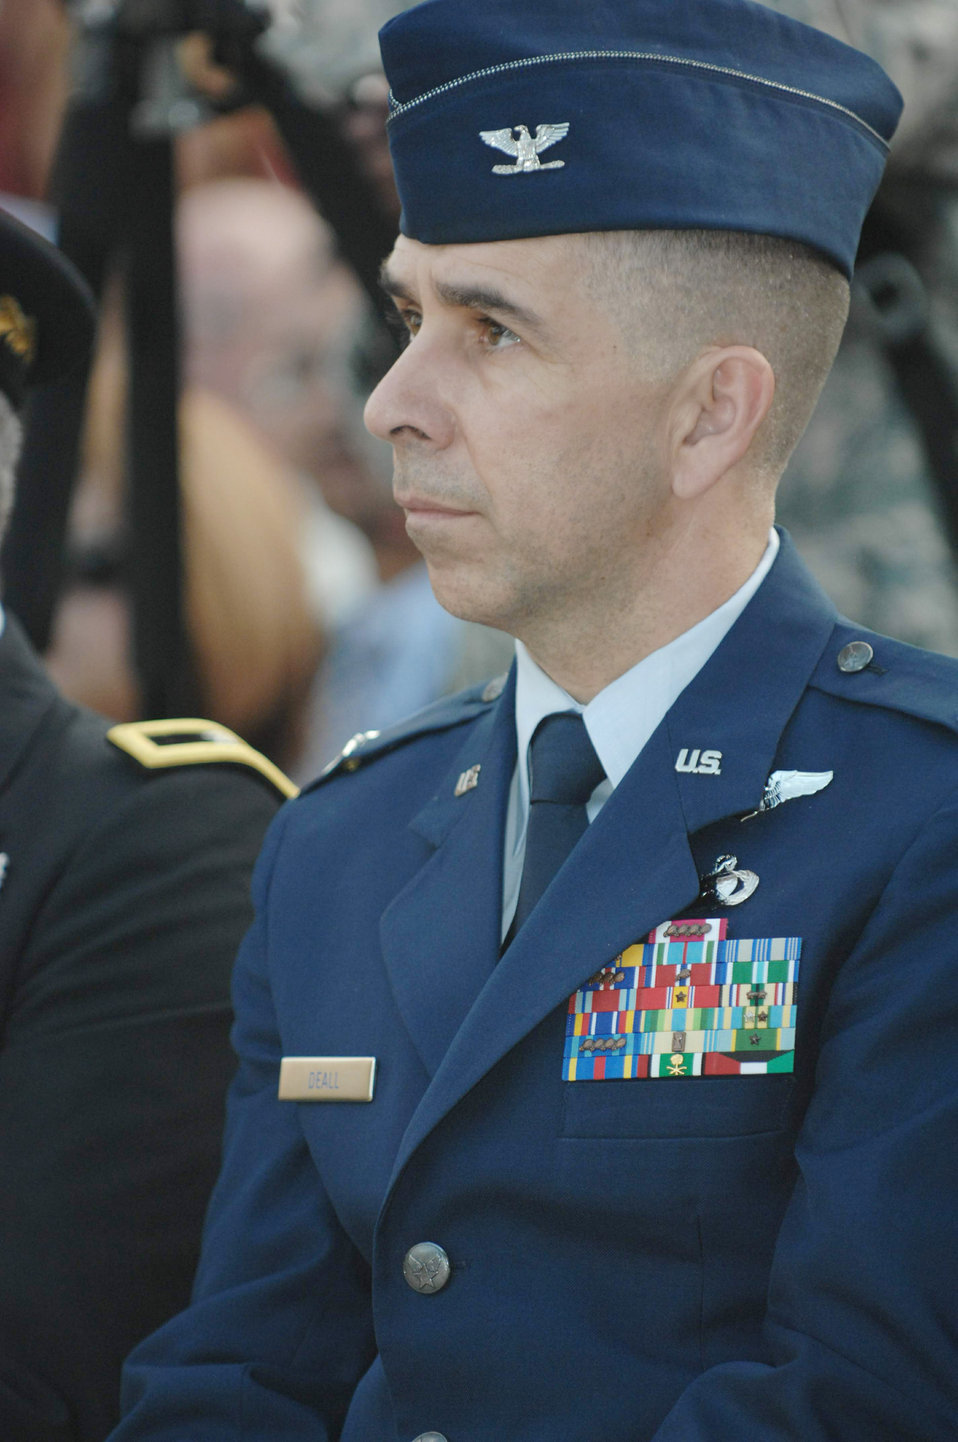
Reservists honor fallen servicemembers

Col. Tom Deall attends the El Capitolio 's El Monumento de la Recordacion (Memorial Monument), the location of the 2009 League of United Latin American Citizens convention and exposition July 14 at San Juan, Puerto Rico. LULAC is the nation's oldest and largest Hispanic organization advocating for Latinos in the United States for 80 years. Colonel Deall is assigned to the Air Force Reserve Command.